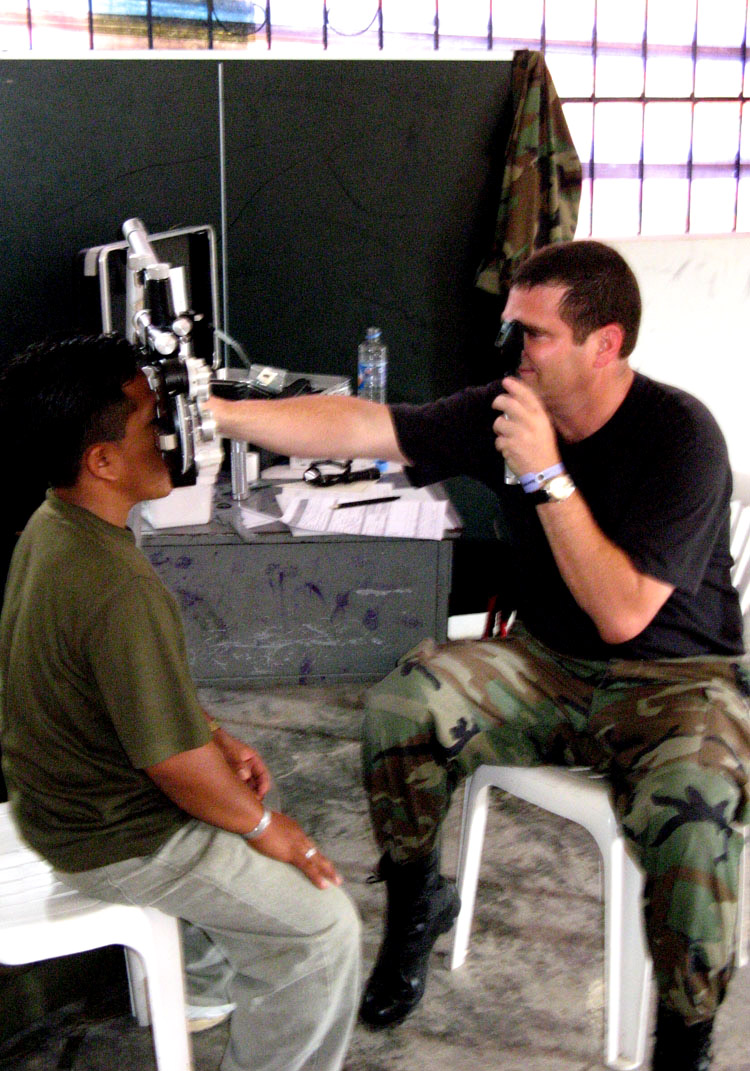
Holloman Airmen return from Ecuador medical visit

Maj. Don Hamer checks a local Ecuadorian's eyes while deployed to the South American country. Fourteen Airmen traveled there from Holloman Air Force Base, N.M., for two weeks on a humanitarian assistance deployment and treated more than 6,800 patients and filled more than 17,500 prescriptions. Major Hamer is a 49th Medical Group optometrist.